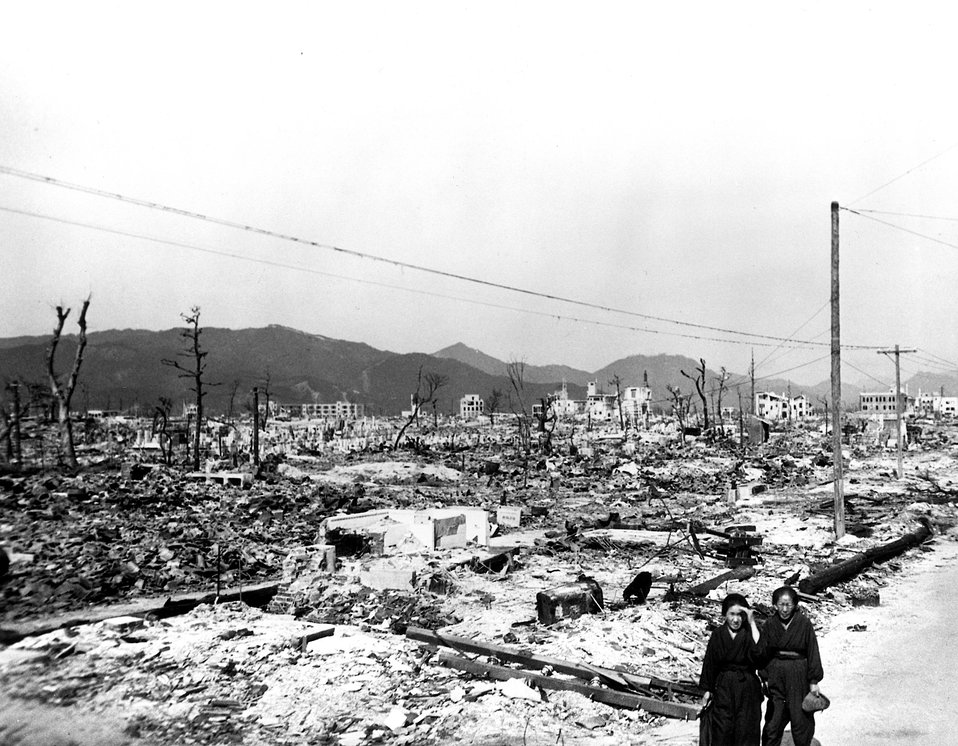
Atomic bomb damage at Hiroshima, Japan seen by the USS Appalachian November 17, 1945.